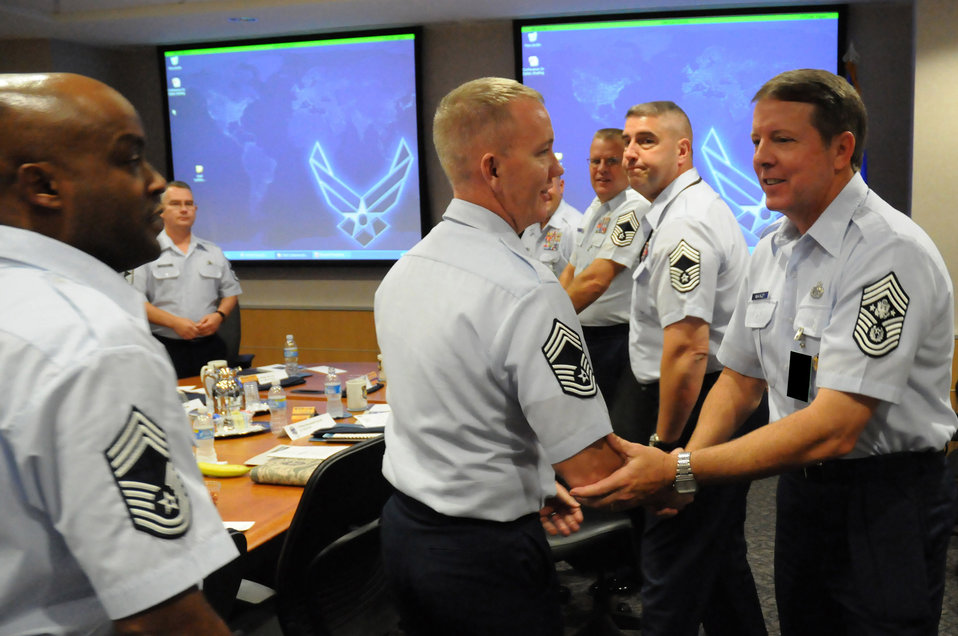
Straight from the chief

Chief Master Sgt. of the Air Force Rodney J. McKinley greets Chief Master Sgt. Christopher Hood and other chief master sergeants at the National Air and Space Intelligence Center during his visit Sept. 8 at Wright-Patterson Air Force Base, Ohio. During his visit, the chief visited with enlisted, officer and civilian employees and answered questions from Airmen. He is the 15th chief master sergeant of the Air Force.